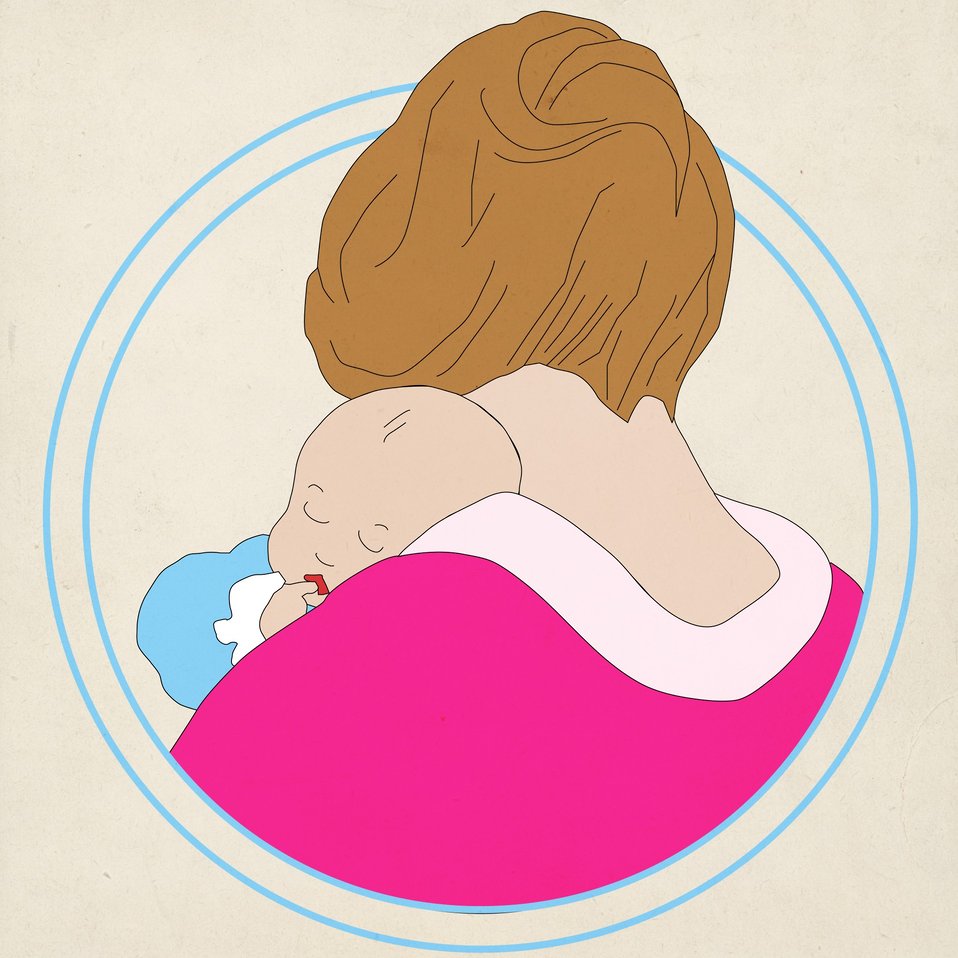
Mother, baby vintage style

Vintage style mother holding sleeping baby boy sucking thumb illustration.